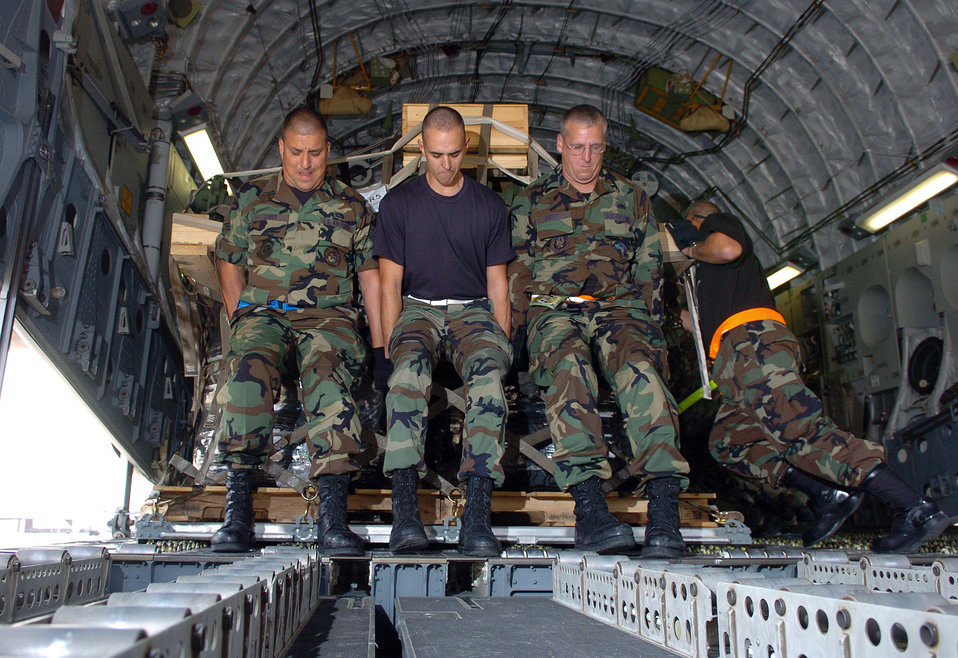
Moving

From left, Senior Airmen Marco Zuber, John Clayton and Staff Sgt. David Ebert load a C-17 Globemaster III, Nov 13 at Incirlik Air Base, Turkey. Over half of all air cargo delivered to support Operation Iraqi Freedom is processed through here. Sergeant Ebert, Airmen Zuber and Clayton are from the 728th Airlift Wing.